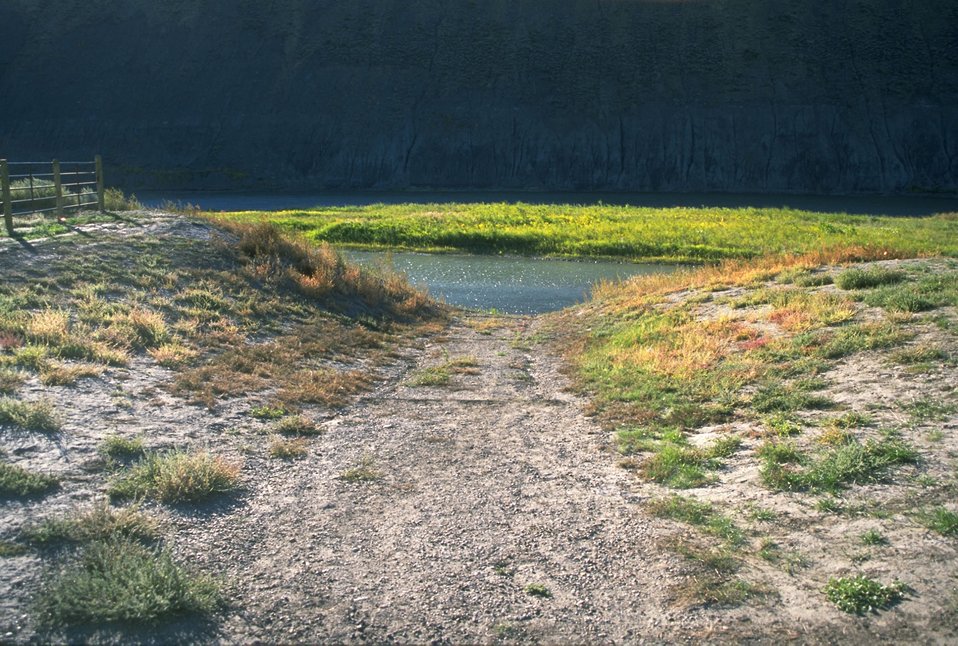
Canoe launching area at Fort Benton Fairgrounds